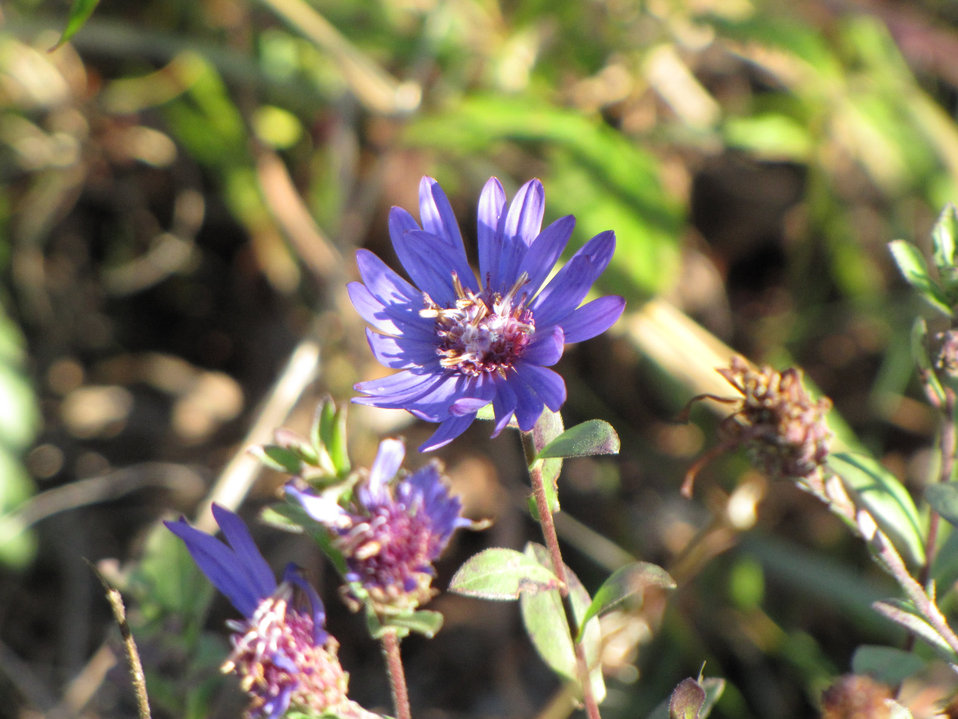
Georgia aster flower.